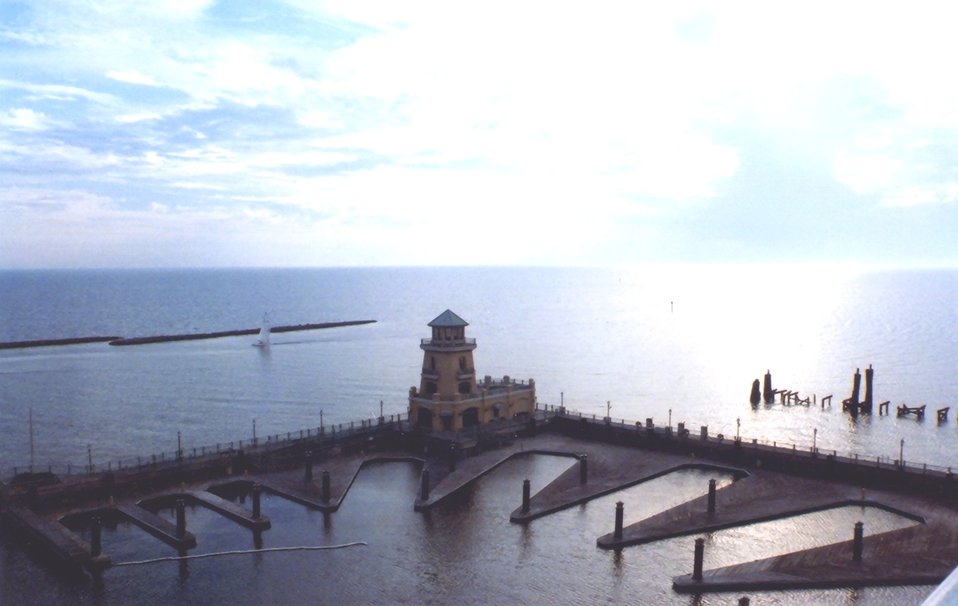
The harbor entrance at Biloxi.